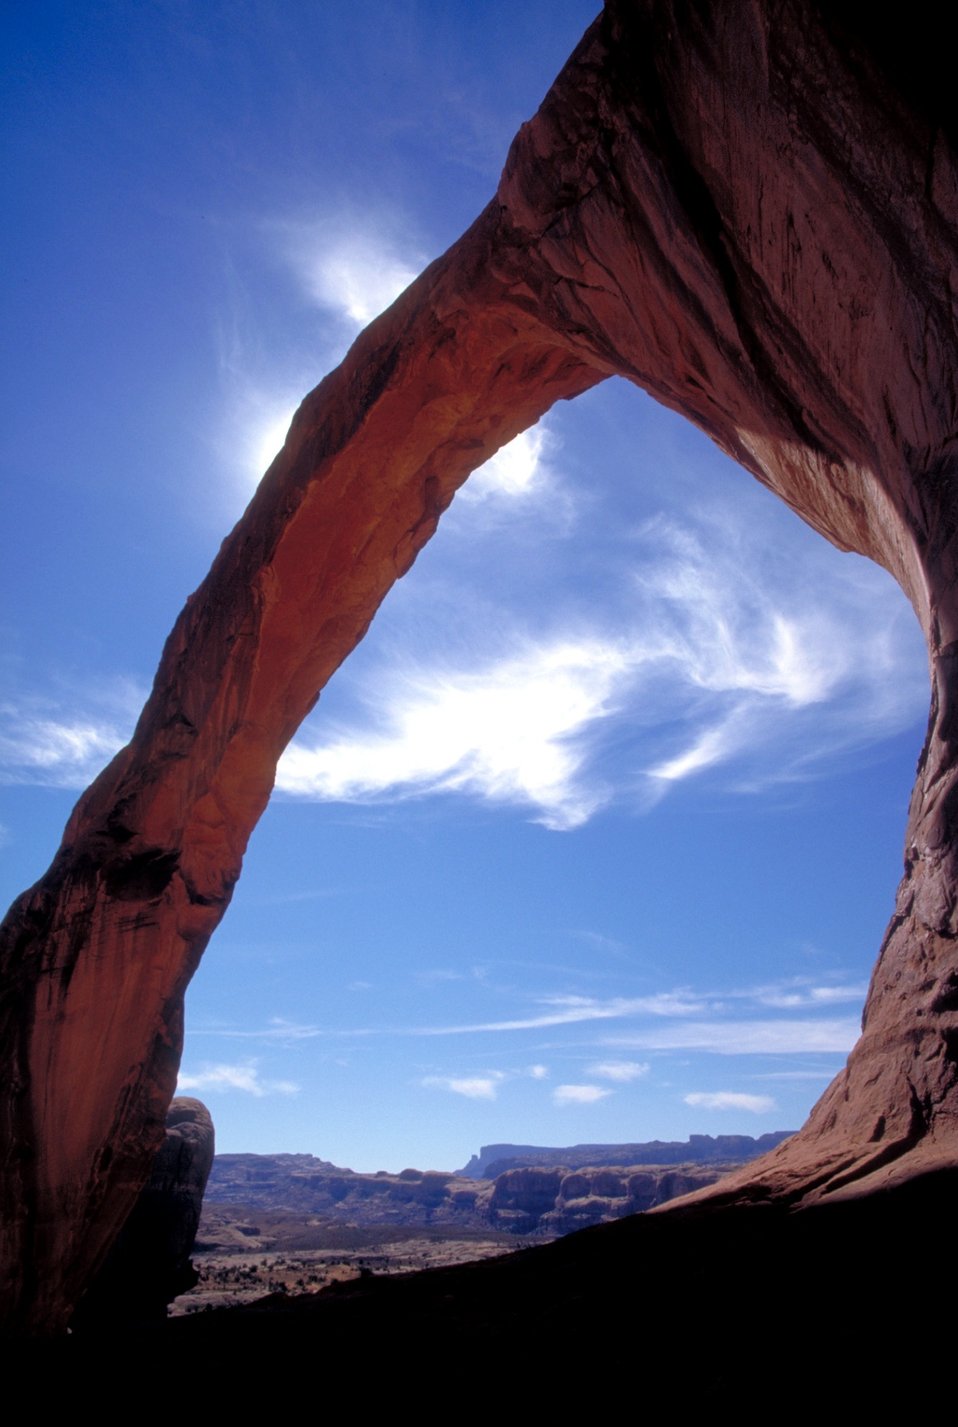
Corona Arch near Moab, Utah.